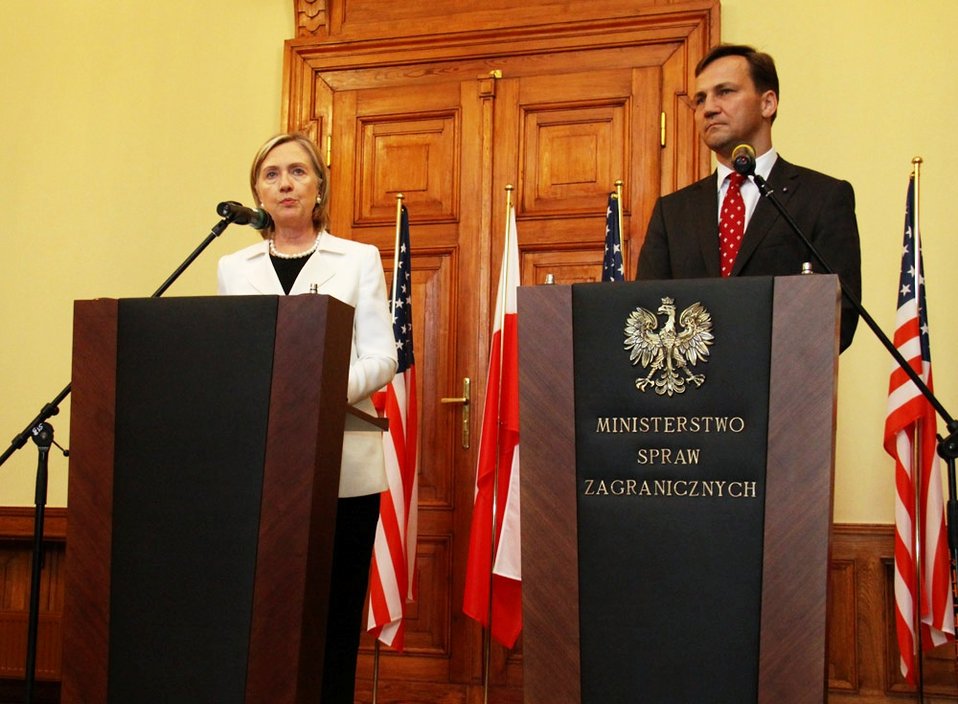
Secretary Clinton and Polish Foreign Minister Sikorski Respond to Questions

U.S. Secretary of State Hillary Rodham Clinton and Polish Foreign Minister Radoslaw Sikorski respond to questions from the press after their bilateral meeting at the City Hall of Krakow in Poland on July 3, 2010.